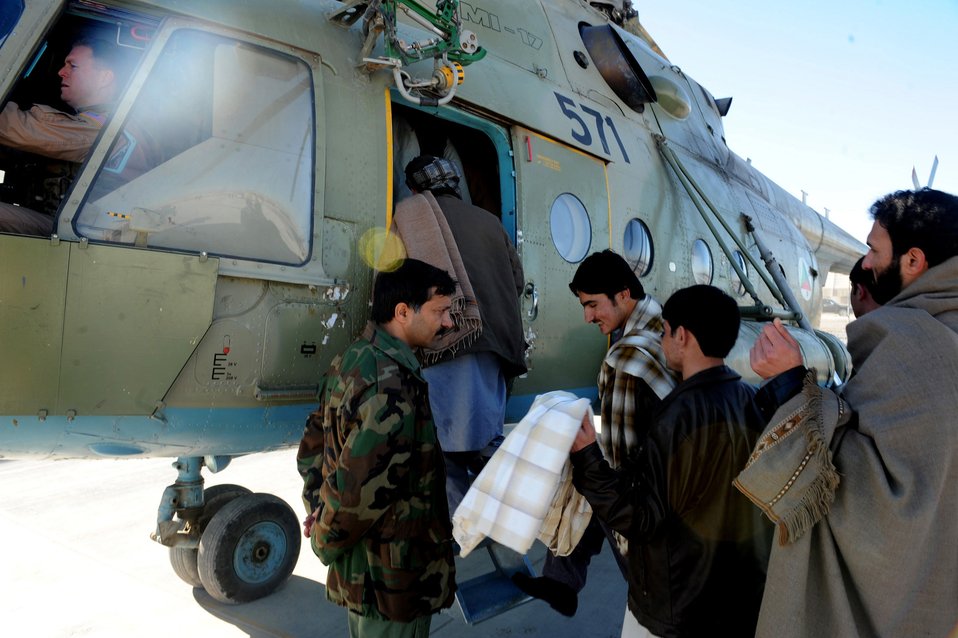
Afghanistan National Army Air Corp soldiers board an Mi-17 helicopter Jan. 7, 2010, at Kandahar Airfield, Afghanistan. Missions like this are becoming more common as 441st Air Expeditionary Advisory Squadron Airmen continue empowering Afghans to provide their own security by mentoring MI-17 helicopter pilots. The Mi-17 helicopter is piloted by 441st Air Expeditionary Advisory Squadron mentors and ANAAC pilots.